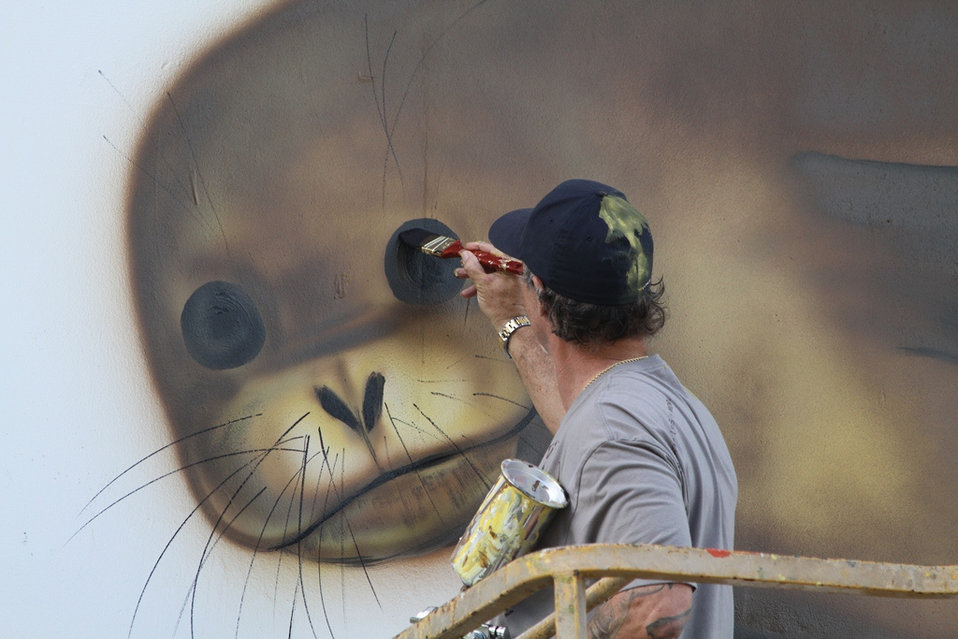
Wyland paints a monk seal

The artist Wyland, who goes by only one name, paints a mural on Charlie Barracks, a former military barracks still in use on Midway.
Midway Atoll National Wildlife Refuge,
Papahānaumokuākea Marine National Monument
January 2012